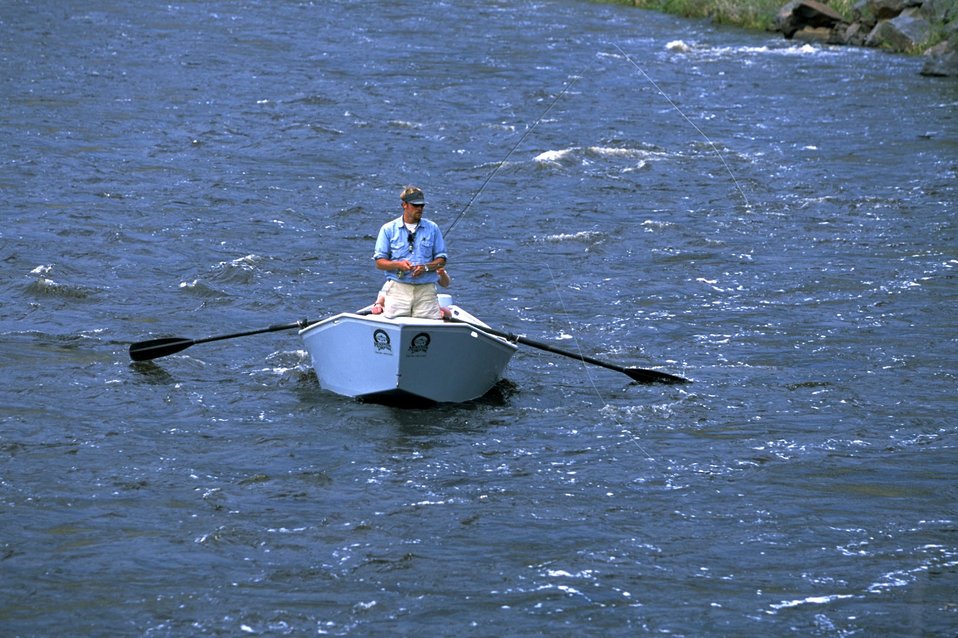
Fishing the Big Hole